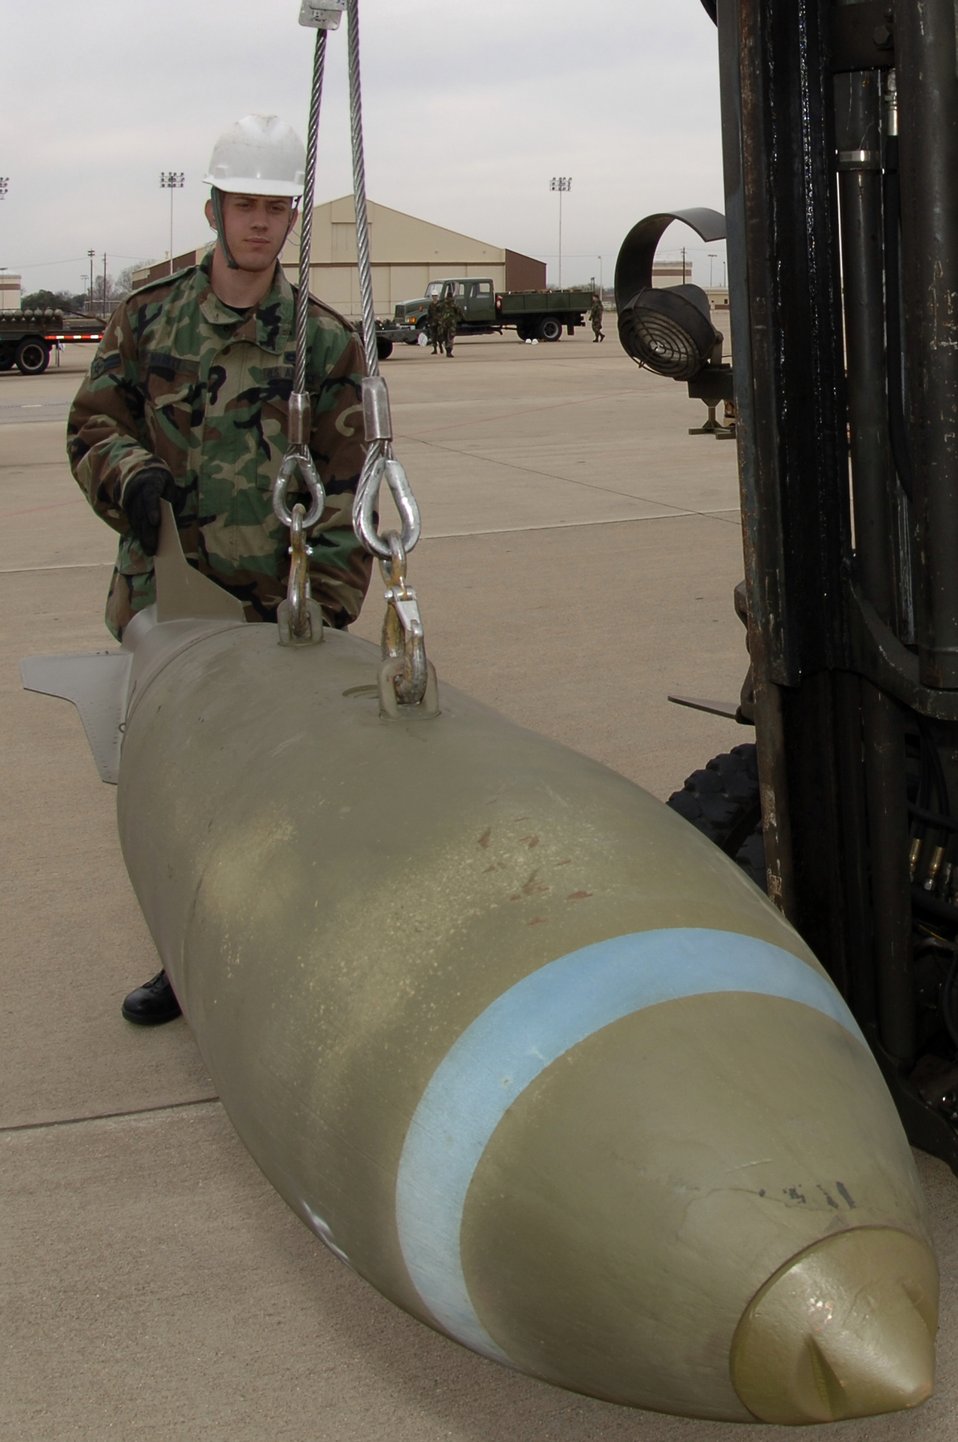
Display of might

BARKSDALE AIR FORCE BASE, La. (AFPN) -- Airman 1st Class Christopher Marett unloads and transports an M-117 bomb. The munitions are on display with the B-52 Stratofortress to show its full capabilities. Airman Marett is with the 2nd Munitions Squadron here.